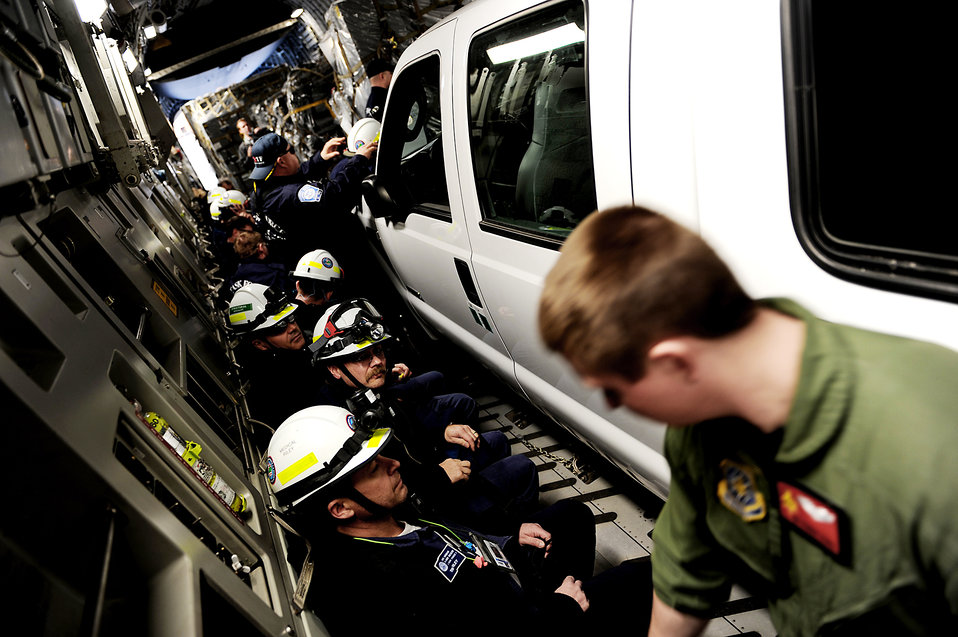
Haiti Earthquake Relief

Members from the Virginia Task Force 2 Urban Search and Rescue team and supplies get ready for take-off aboard a C-17 Globemaster III from Travis Air Force Base, Calif., Jan. 15, 2010, at Norfolk, Va. The Virginia Task Force 2 team is heading to Haiti as part of the Haitian earthquake relief effort.